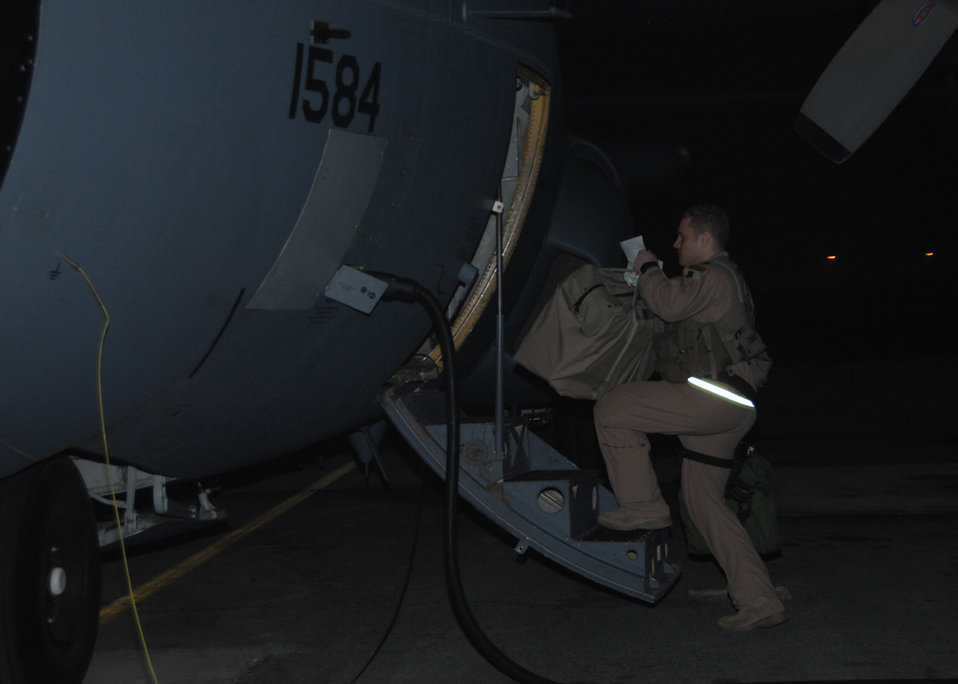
43rd EECS passes 20,000 combat hours

Capt. Quinn Nixon, an EC-130 Compass Call aircraft commander with the 43rd Expeditionary Electronic Combat Squadron, loads his gear onto the aircraft Feb. 16 at an air base in Southwest Asia. During the flight, the aircrew wouild complete the 20,000th combat flight hour for the unit which has had five years of continuous deployment.